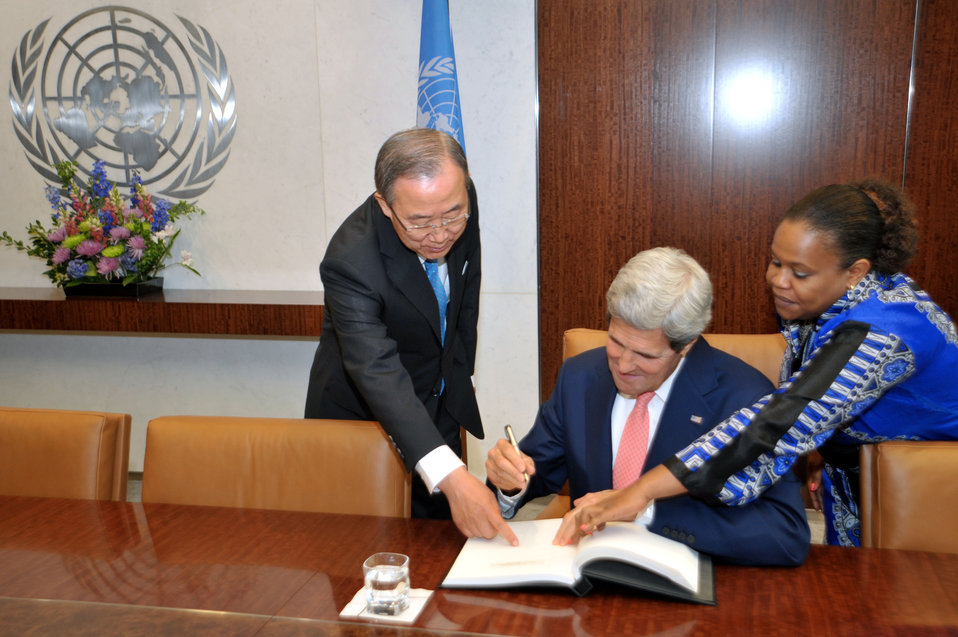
Secretary Kerry Signs a Guestbook at the United Nations

U.S. Secretary of State John Kerry, joined by United Nations Secretary General Ban Ki-moon and U.S. UN Protocol chief Nicole Bresson, signs a guestbook at the UN headquarters in New York City on July 25, 2013.